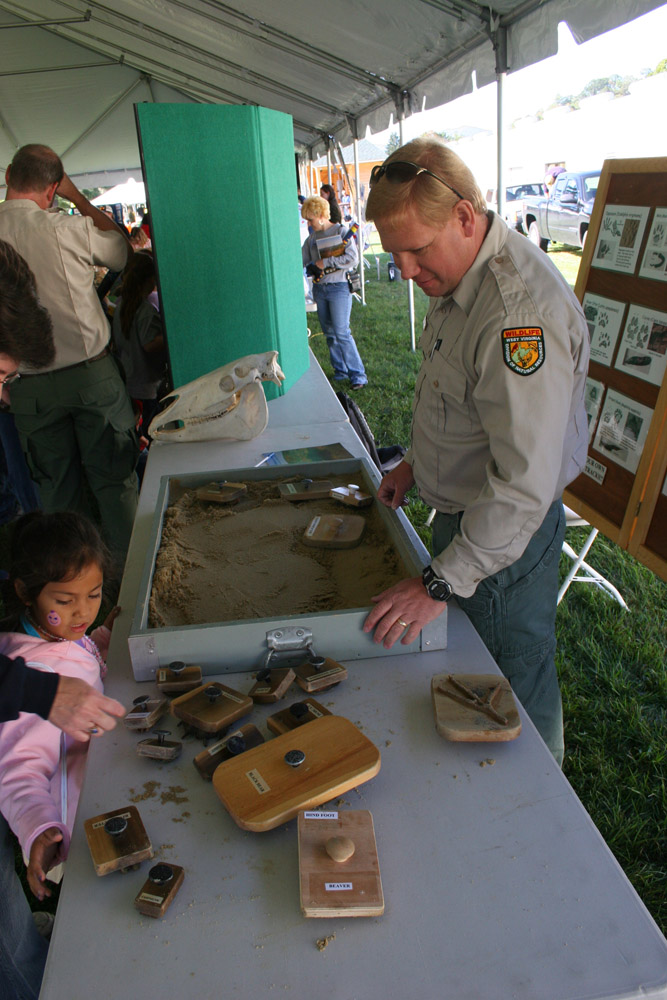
Freshwater Folk Festival (19)